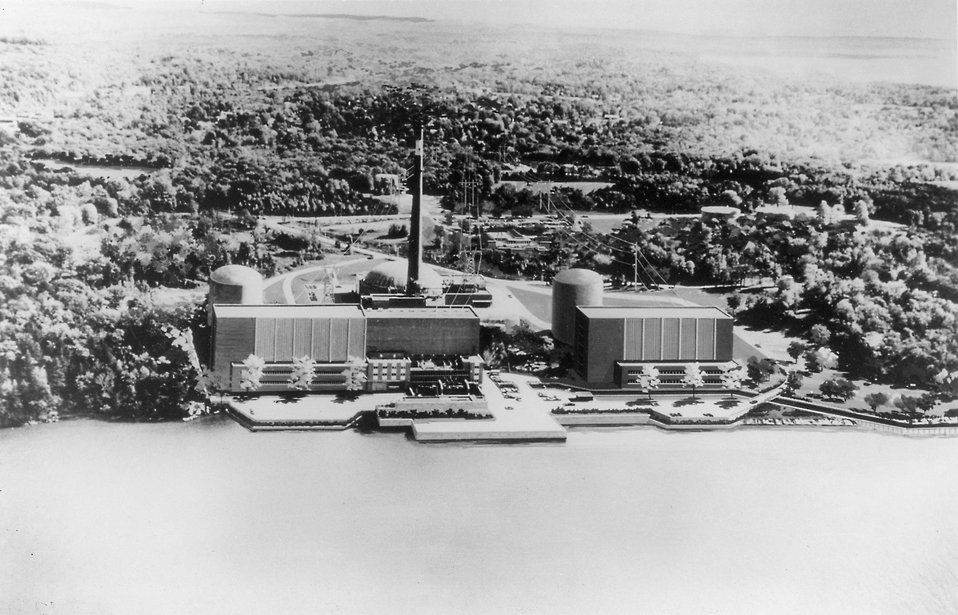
Consolidated Edison's proposed third nuclear electric generating unit is shown to the right (south) on this artist's rendering of the company's nuclear power complex at Indian Point, Buchanan, New York, as it will look on completion, in 1972. Circa 1968.